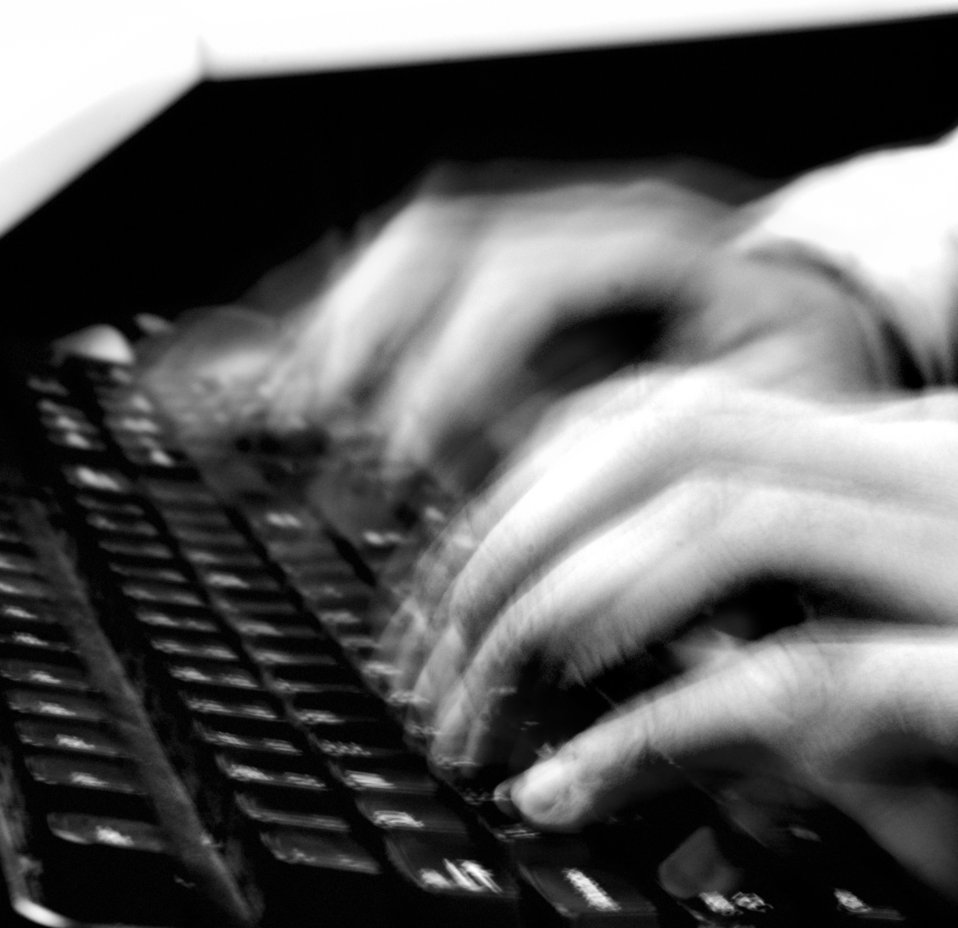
Hands typing on a keyboard

U.S. Air Force Photo Illustration - 'Combat coders build Web pages for warfighters' A combat coder writes computer code April 16, 2010, in the Combined Air and Space Operations Center.